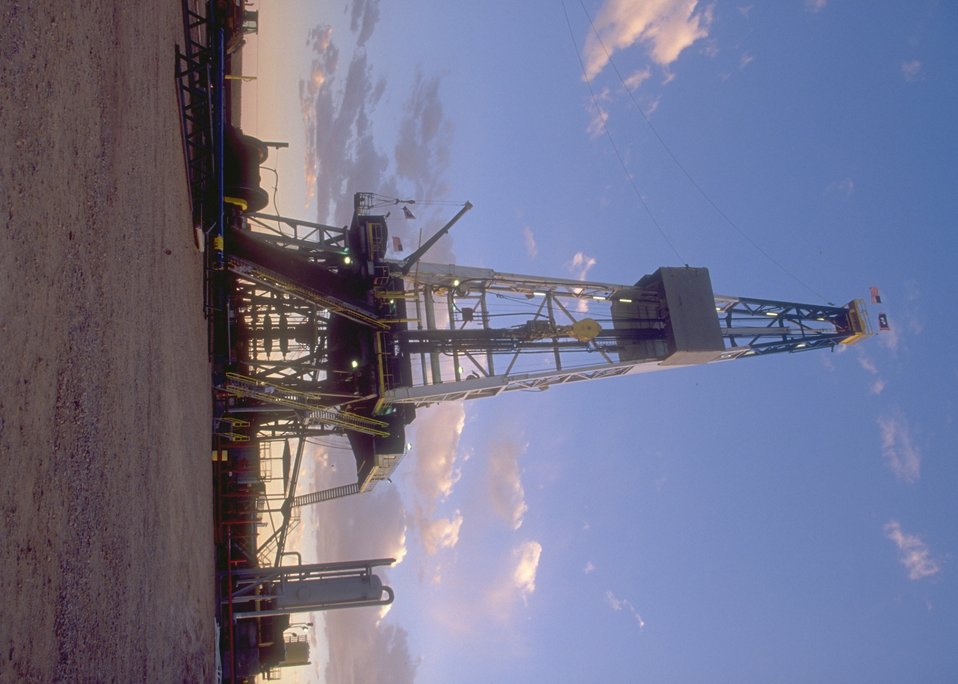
Burlington Northern deep well rig, Casper Field Office.